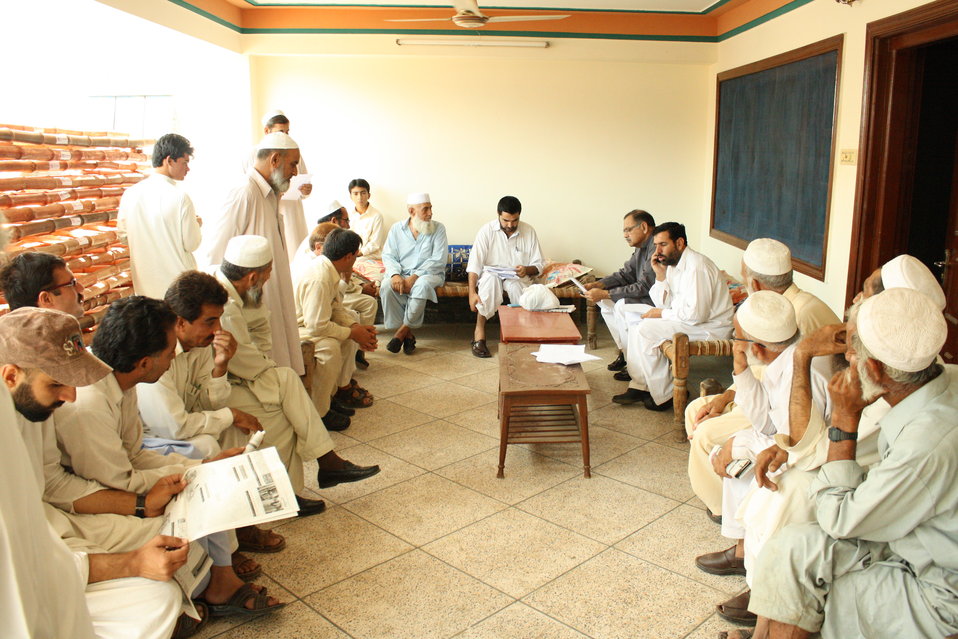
5. USAID has facilitated meetings between the buyers and peach SMEs and is assisting them meet the standards required by large-scale buyers through trainings